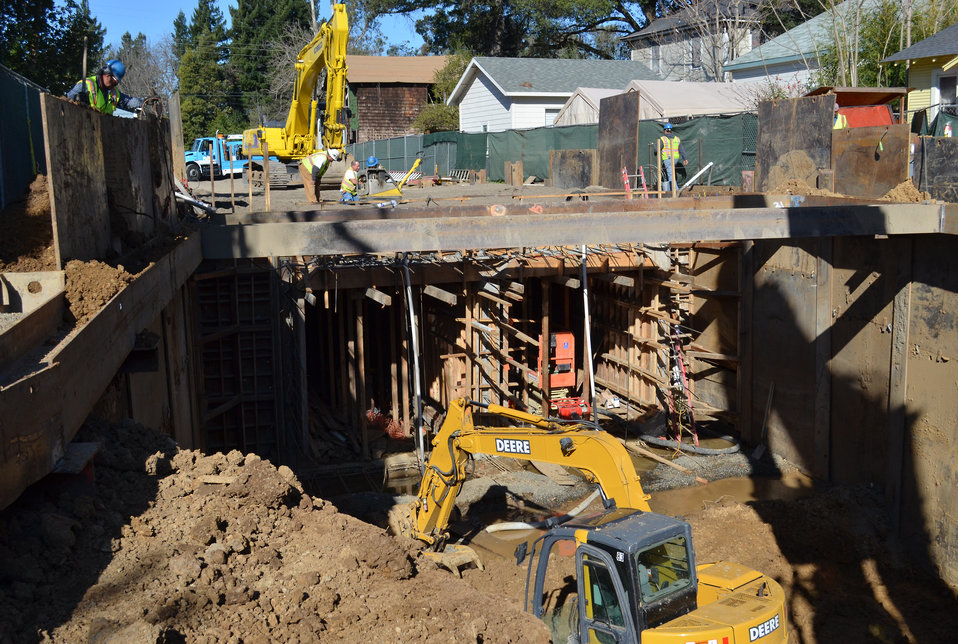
Corps provides glimpse of Napa Creek project progress

Construction crews continue to create the frame for the box culverts along the upper reach of the Napa Creek in Napa, Calif., March 7, 2012. The culverts – tunnels large enough for a car to drive through – will channel flood water from the creek more quickly to the Napa River, reducing the flood risk to nearby homes and businesses. The culverts are part of the $14.8 million Napa Creek project, a joint effort of the U.S. Army Corps of Engineers Sacramento District, the city of Napa, and the Napa Flood Control and Water Conservation District to reduce the flood risk for the city. The project is funded by the American Recovery and Reinvestment Act of 2009.